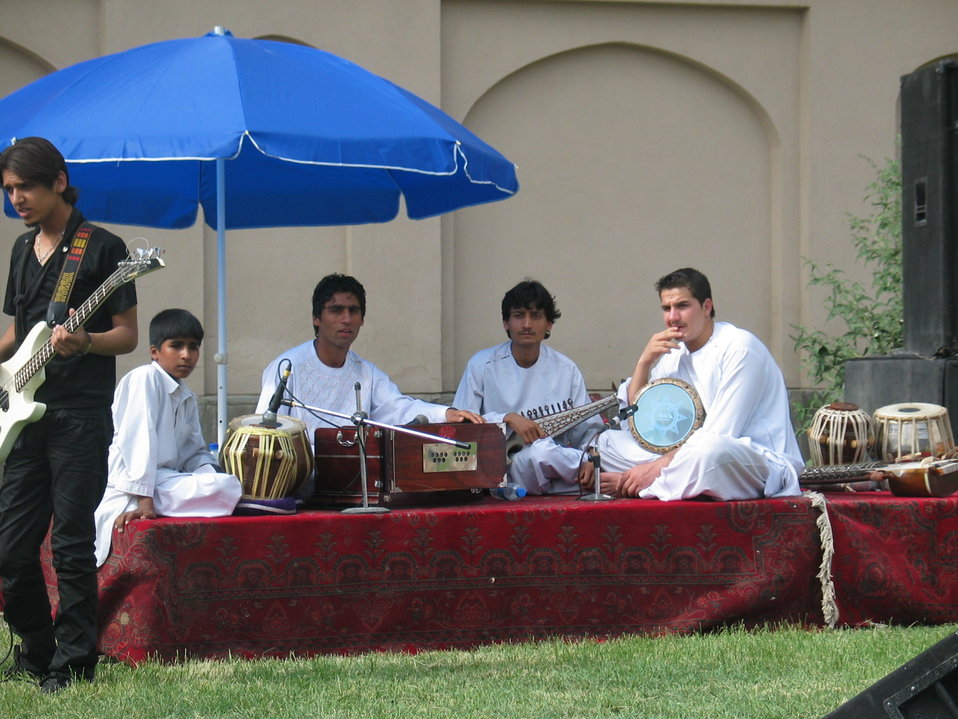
Afghan Youth Voices 008